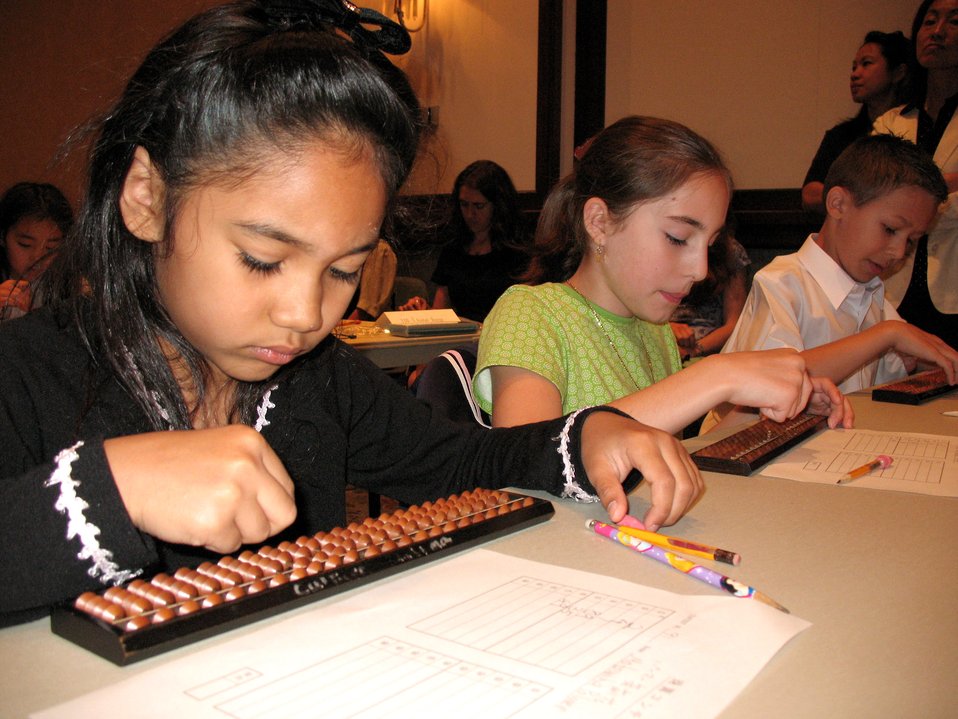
DODDS students compete in math contest

Students from U.S. military bases throughout the region near Yokota Air Base, Japan, competed May 23 at the 25th Annual Soroban Contest in Tokyo. A soroban, also known as an abacus in English, was used a long time ago by Japanese merchants and is a historic part of Japanese culture.